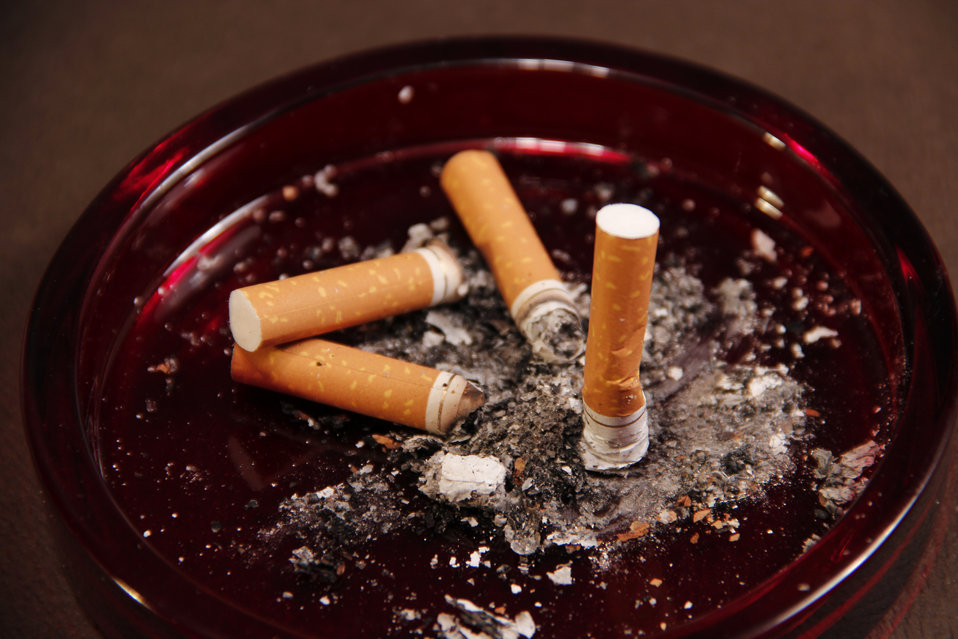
This image depicts a ruby-colored glass ashtray, which contained four used cigarette butts along with their ashes.